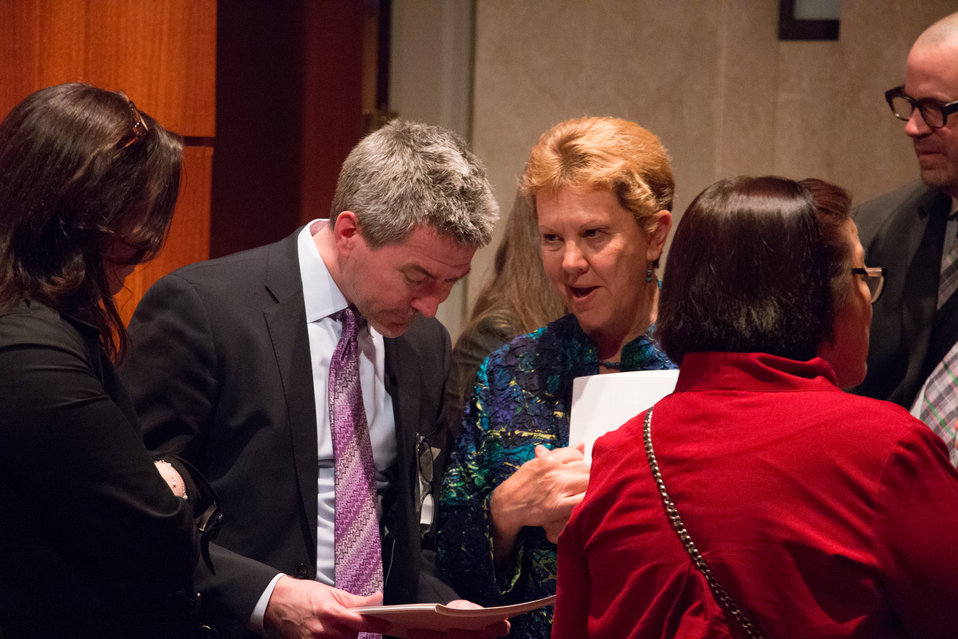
VHAP Launch (458 of 511)